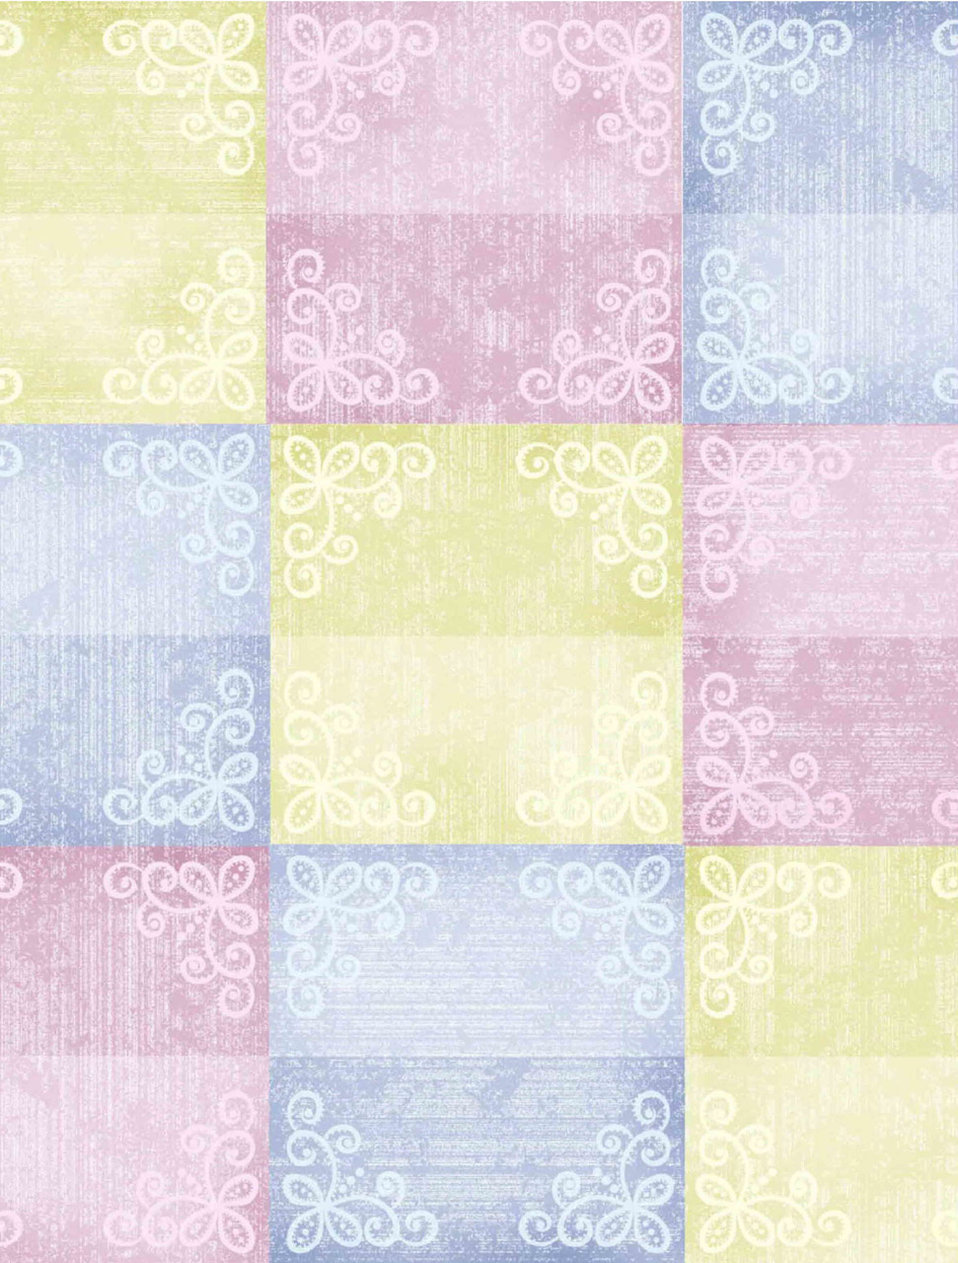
Quilted background

A beautiful square background with little embellishments in the corners of each box.